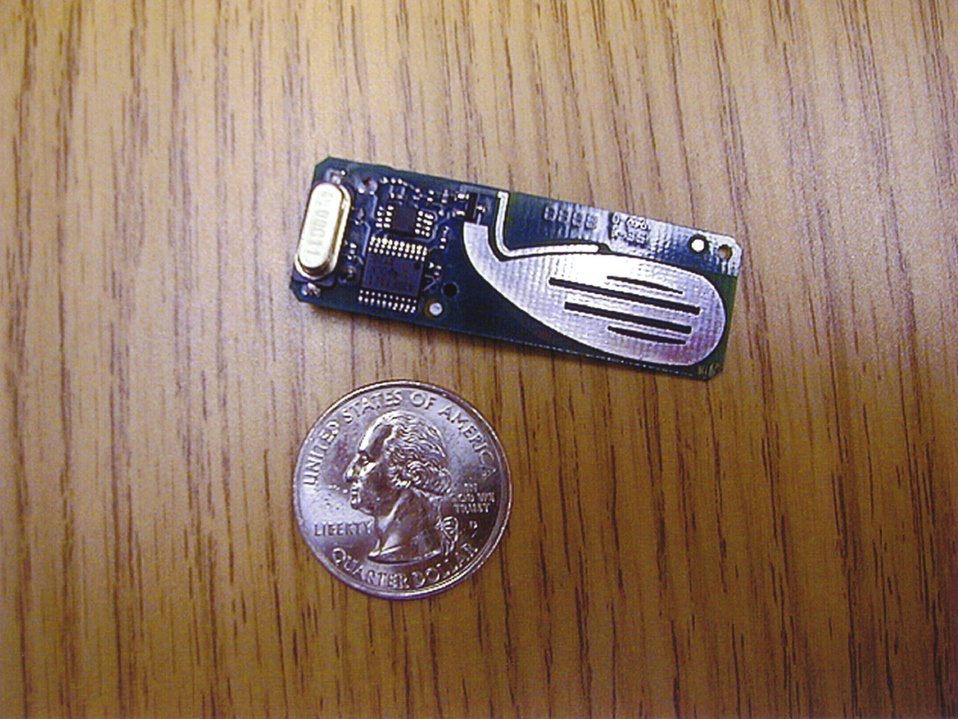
PNNL'S LONG RANGE SEMI-PASSIVE RADIO FREQUENCY IDENTIFICATION SYSTEM.

PNNL AND WAVE ID, A SPINOFF COMPANY OF PNNL, DEVELOPED THE LONG RANGE SEMI-PASSIVE RADIO FREQUENCY IDENTIFICATION SYSTEM, WHICH WON A 2001 R&D 100 AWARD. THE SYSTEM REMOTELY IDENTIFIES, LOCATES, AND DETERMINES THE STATUS OF TAGGED ITEMS UP TO 200 METERS AWAY. INVENTORIES OF LARGE WAREHOUSES OR STORES CAN BE COMPLETED IN MINUTES INSTEAD OF DAYS, AND THEIR CONDITION DETERMINED.